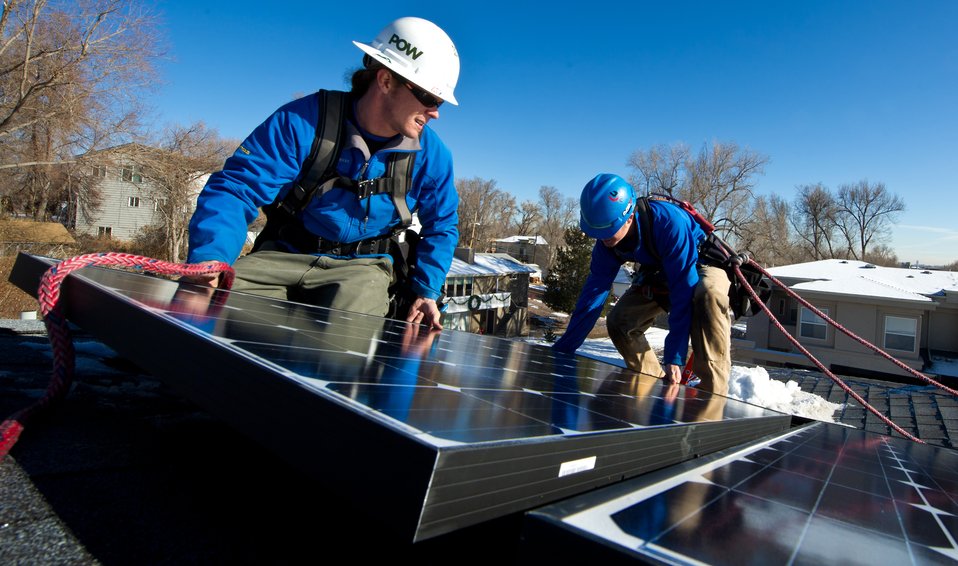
PV powered townhome

Kyle Travis, left and Jon Jackson, with Lighthouse Solar, install microcrystalline PV modules on top of Kevin Donovan's town home.